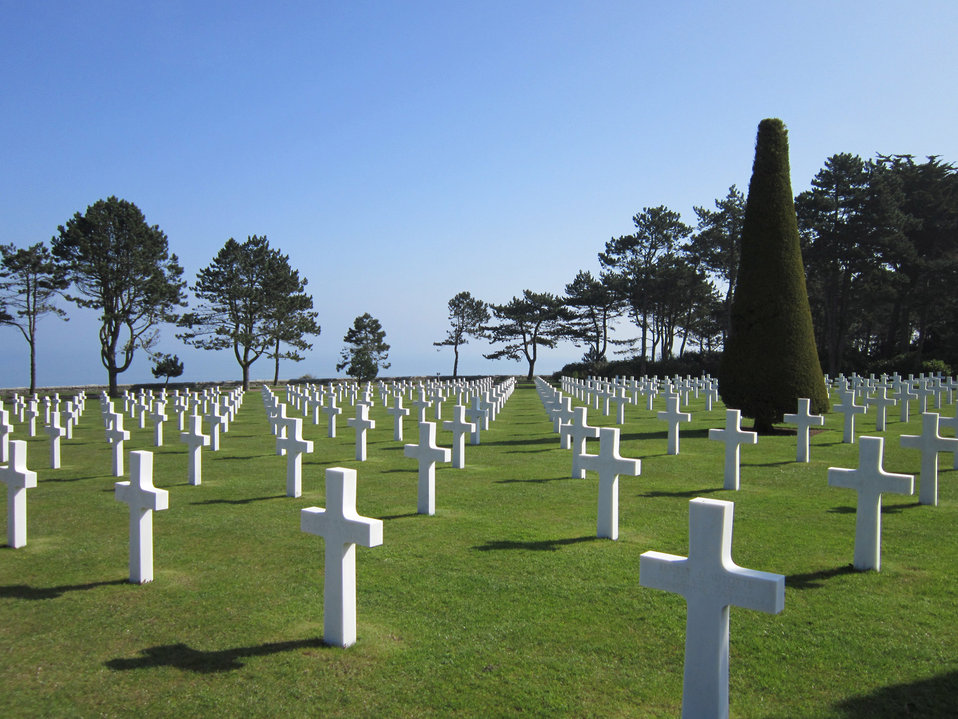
Omaha beach cemetery - normandy

Omaha beach cemetery under the sun. normandy..